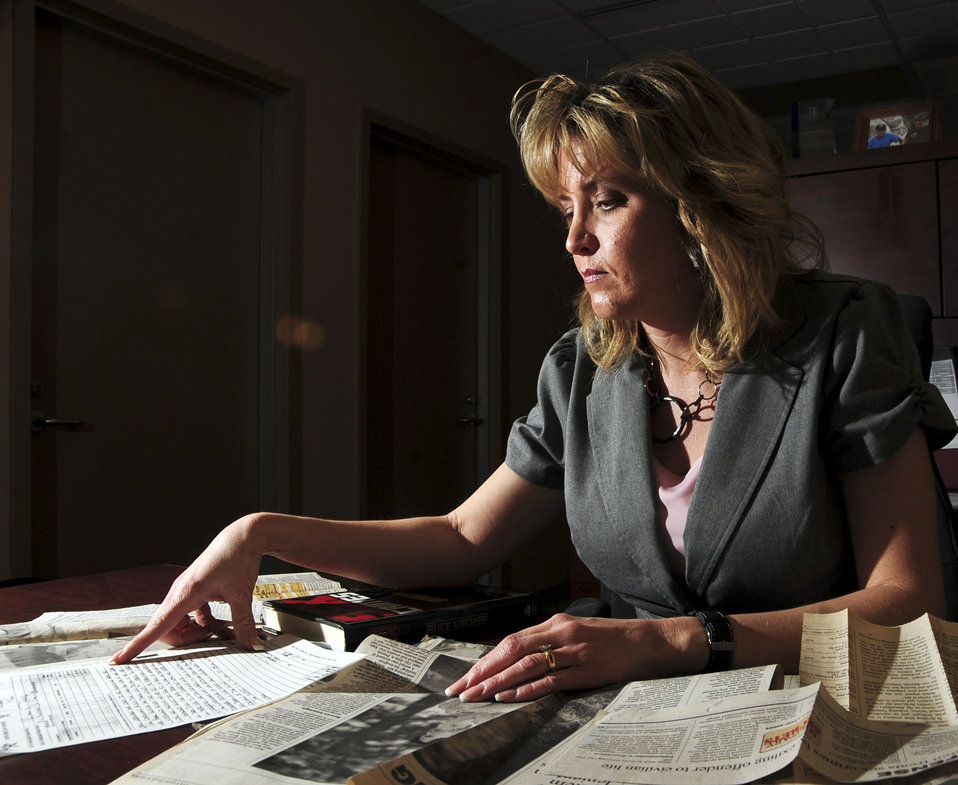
'I needed to use the word

Michele Rogers, a 28th Bomb Wing protocol specialist at Ellsworth Air Force Base, S.D., looks at newspaper clippings and court notes related to her 1993 sexual assault April 5, 2011. The crime, which took place at a house party, led to the removal of a senior airman from the Air Force.